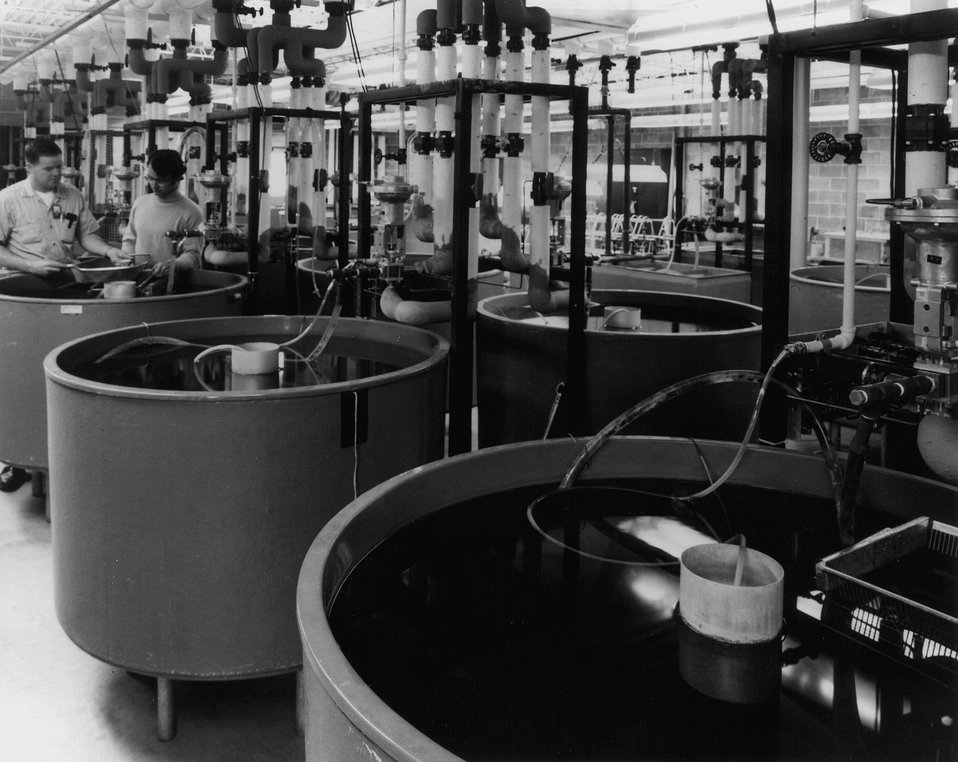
Large, circular tanks are used in the Aquatic Ecology Laboratory at the AEC's Oak Ridge National Laboratory to study thermal effects on fish and other aquatic life. c. 1973